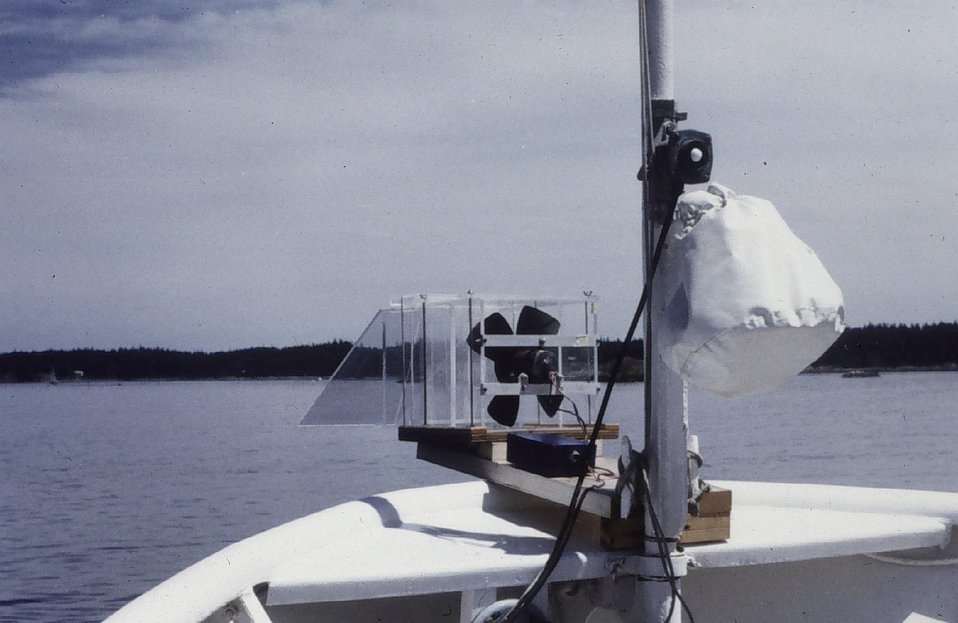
A fog sampler mounted on the bow of the PEIRCE. Fog sampler was designed to capture mist droplets. Fog captured would be analyzed for acid content